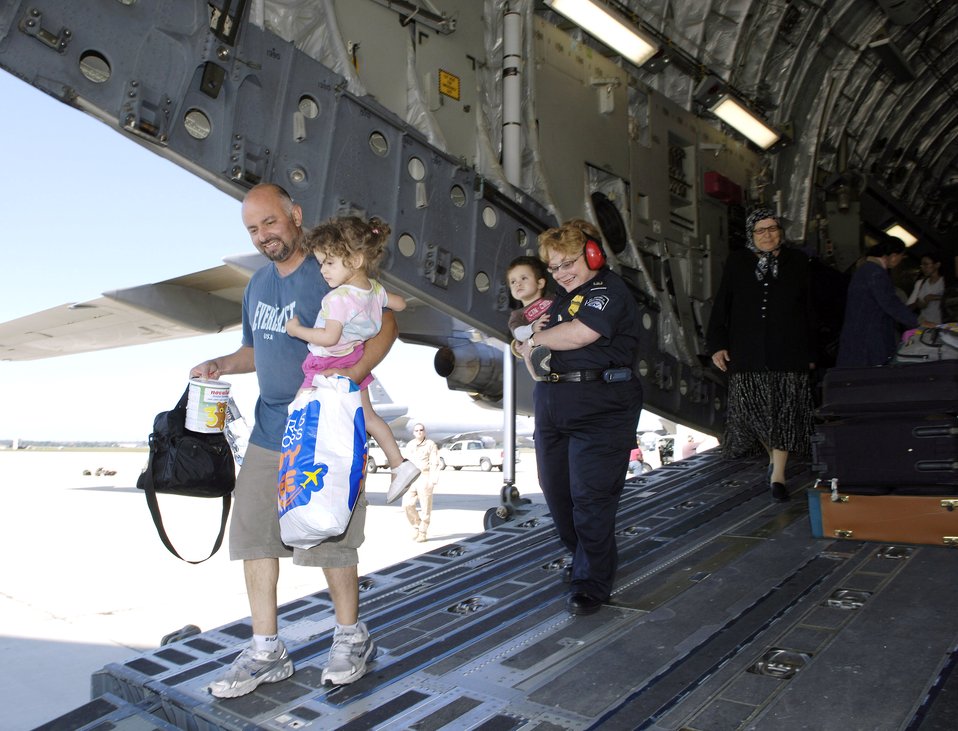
McGuire AFB provides humanitarian assistance

American evacuees from Lebanon depart a C-17 Globemaster III on Monday, July 24, at McGuire Air Force Base, N.J. McGuire is providing humanitarian assistance for American citizens who are leaving Lebanon to return home after more than a week of fighting between the Israeli military and the militant group Hezbollah. More than an expected 1,000 Americans began arriving at McGuire on July 23.